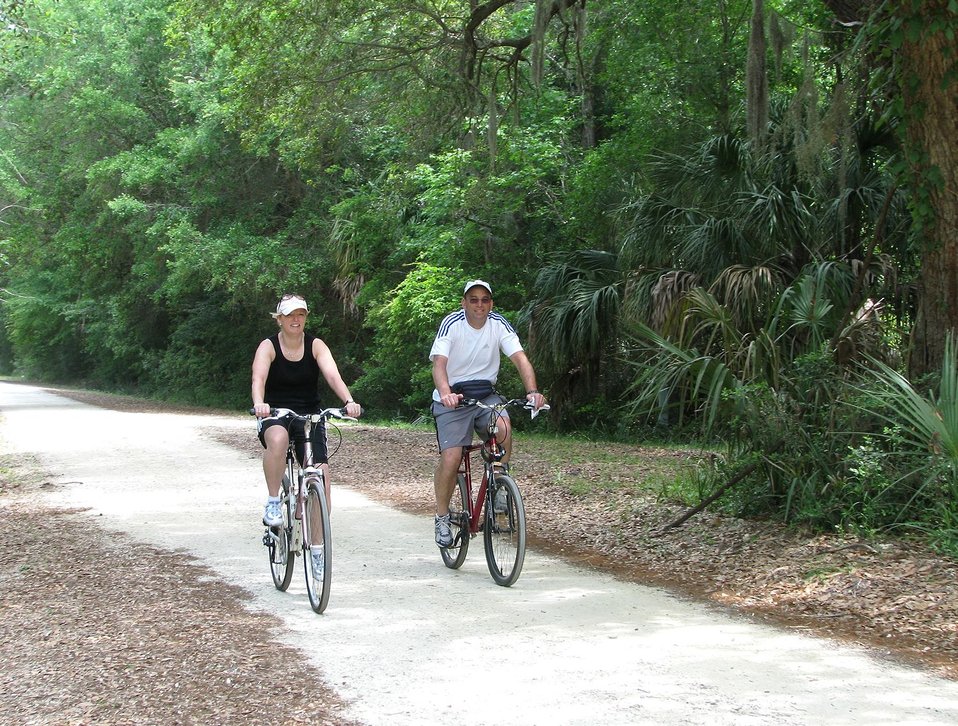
Pinckney Island bicycling

Pinckney Island National Wildlife Refuge, South Carolina.